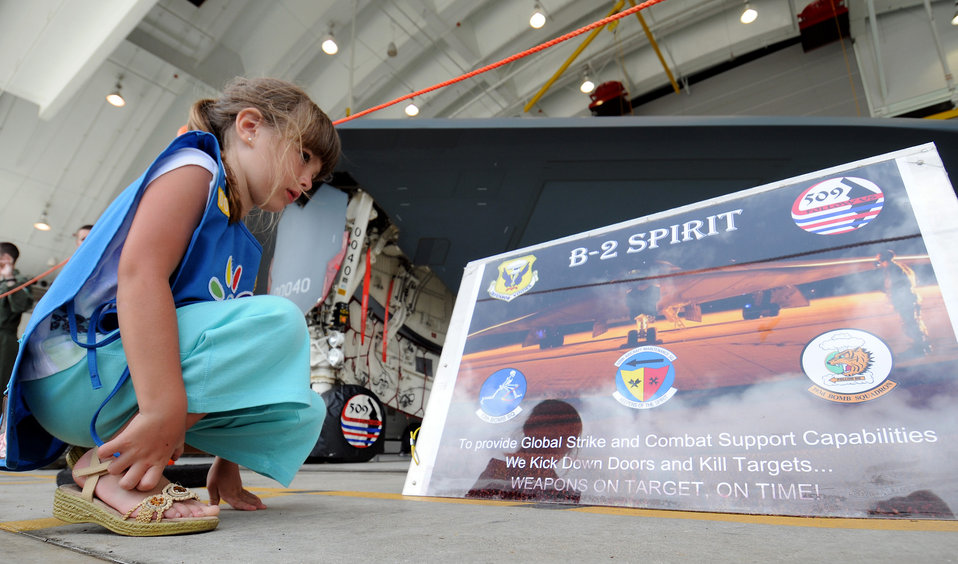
Andersen officials give up-close view of F-22, B-2

Katie Underwood of with Daisy Troop 005 reads about the B-2 Spirit during the March 28 open house at the Andersen Air Force Base, Guam. The event was open to the Armed Forces Committee, Andersen Civilian Advisory Council, Andersen Boy and Girl Scouts, Air Force Junior ROTCs, military identification cardholders and dependents.